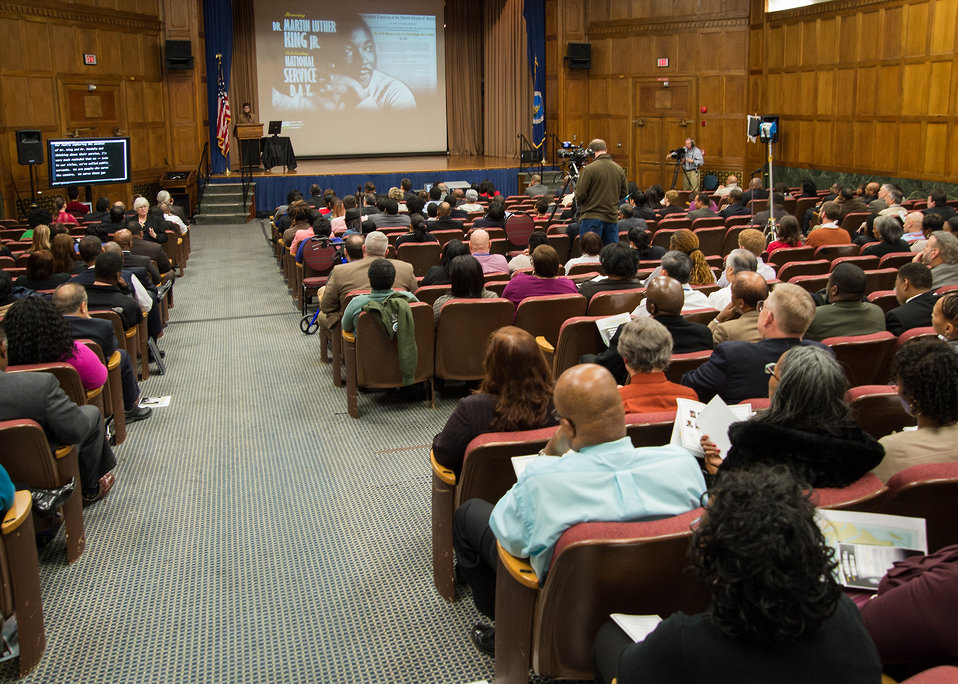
Agriculture Deputy Agriculture Secretary Krysta Harden speaks at the U.S. Department of Agriculture's Dr. Martin Luther King Jr. and National Service Day in Washington, D.C. on Wednesday, Jan. 15, 2014.